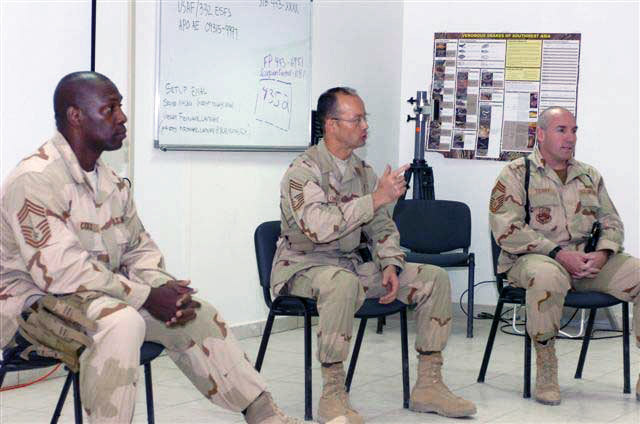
Combat leadership course takes PME to next level

Chief master sergeants share their insight and experiences with junior noncommissioned officers during recent Combat Leadership Course Dec. 6 at Balad Air Base, Iraq. The five-hour course focused on combat environment issues such as situational awareness and performing combat missions outside the wire.